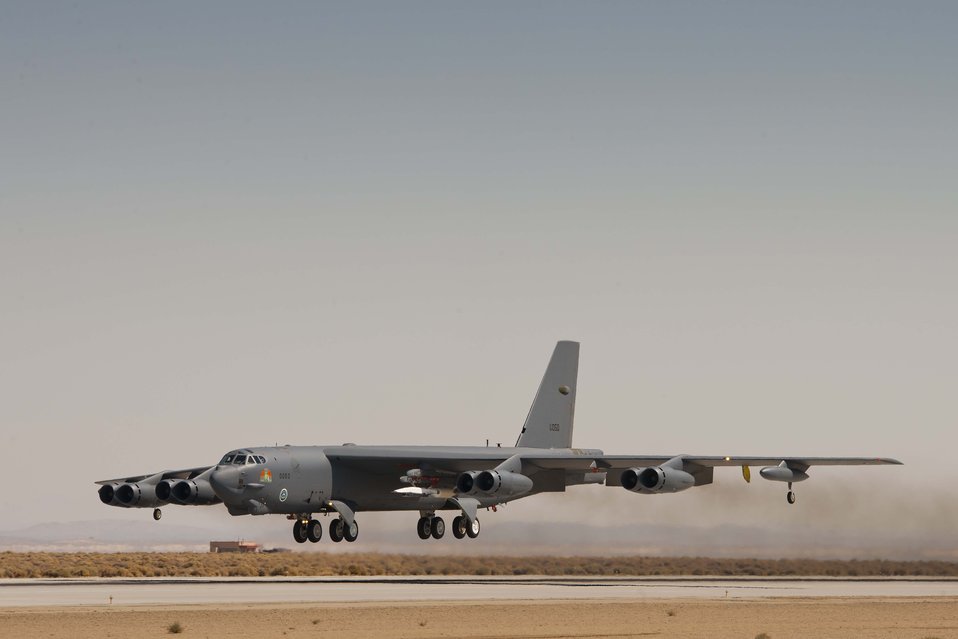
X-51A flight ends prematurely

The B-52 Stratofortress carrying the X-51A Waverider takes off from Edwards Air Force Base, Calif., in preparation for the Aug. 14, 2012, test flight. The test ended prematurely when a fault with a control fin caused the vehicle to lose control.